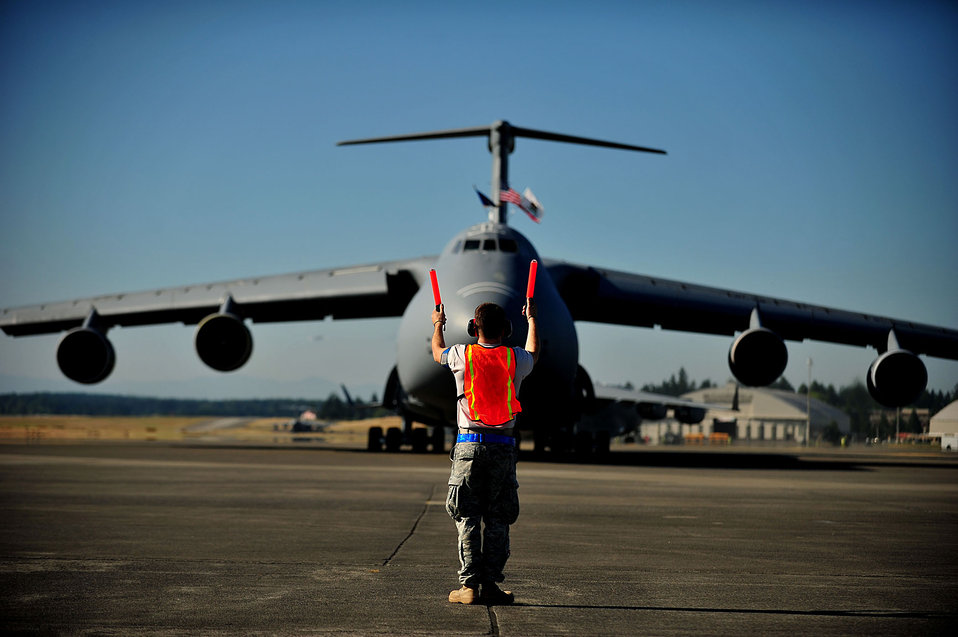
Touchdown!

A C-5 Galaxy from the 60th Air Mobility Wing at Travis Air Force Base, Calif., is taxied in by Airman 1st Class Christopher Cramer on July 23, 2011, as it arrives for Air Mobility Rodeo 2011 at Joint Base Lewis-McChord, Wash. The Rodeo is the U.S. Air Force's premier international combat skill and flying operations competition designed to develop and improve techniques, procedures and interoperability, while optimizing international mobility partnerships and enhancing mobility operations.